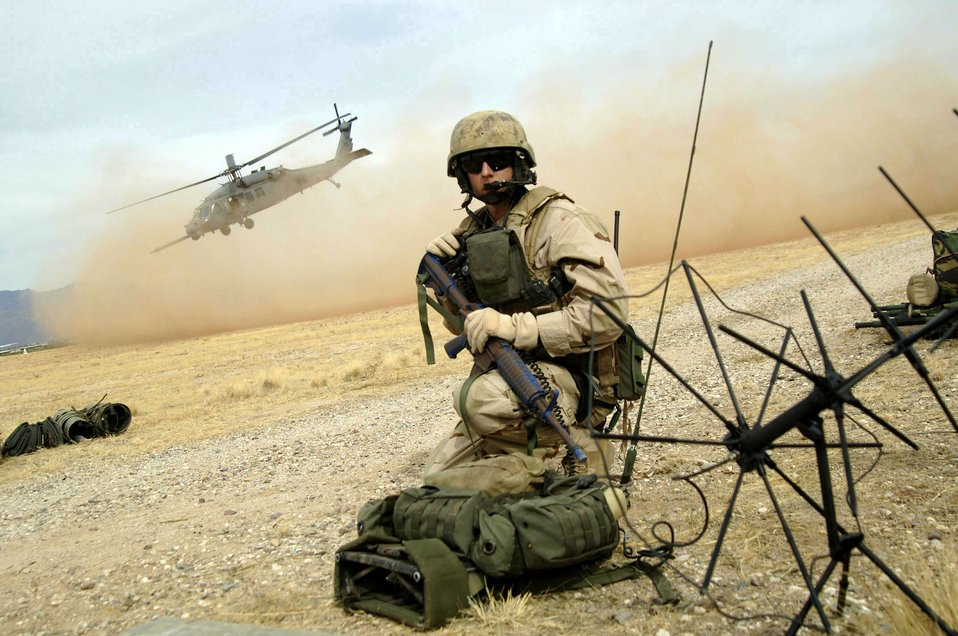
Joint exercise

DAVIS-MONTHAN AIR FORCE BASE, Ariz. (AFPN) -- A combat rescue officer communicates with the HH-60 Pavehawk helicopter crew to organize the extraction of casualties during a joint US and Dutch mass casualty exercise Feb. 14. The scenario involved a simulated shoot-down of a C-141 Starlifter cargo plane by a missile. Pararescuemen from the 48th Rescue Squadron and the Dutch Army worked together to train on combat search and rescue extraction.